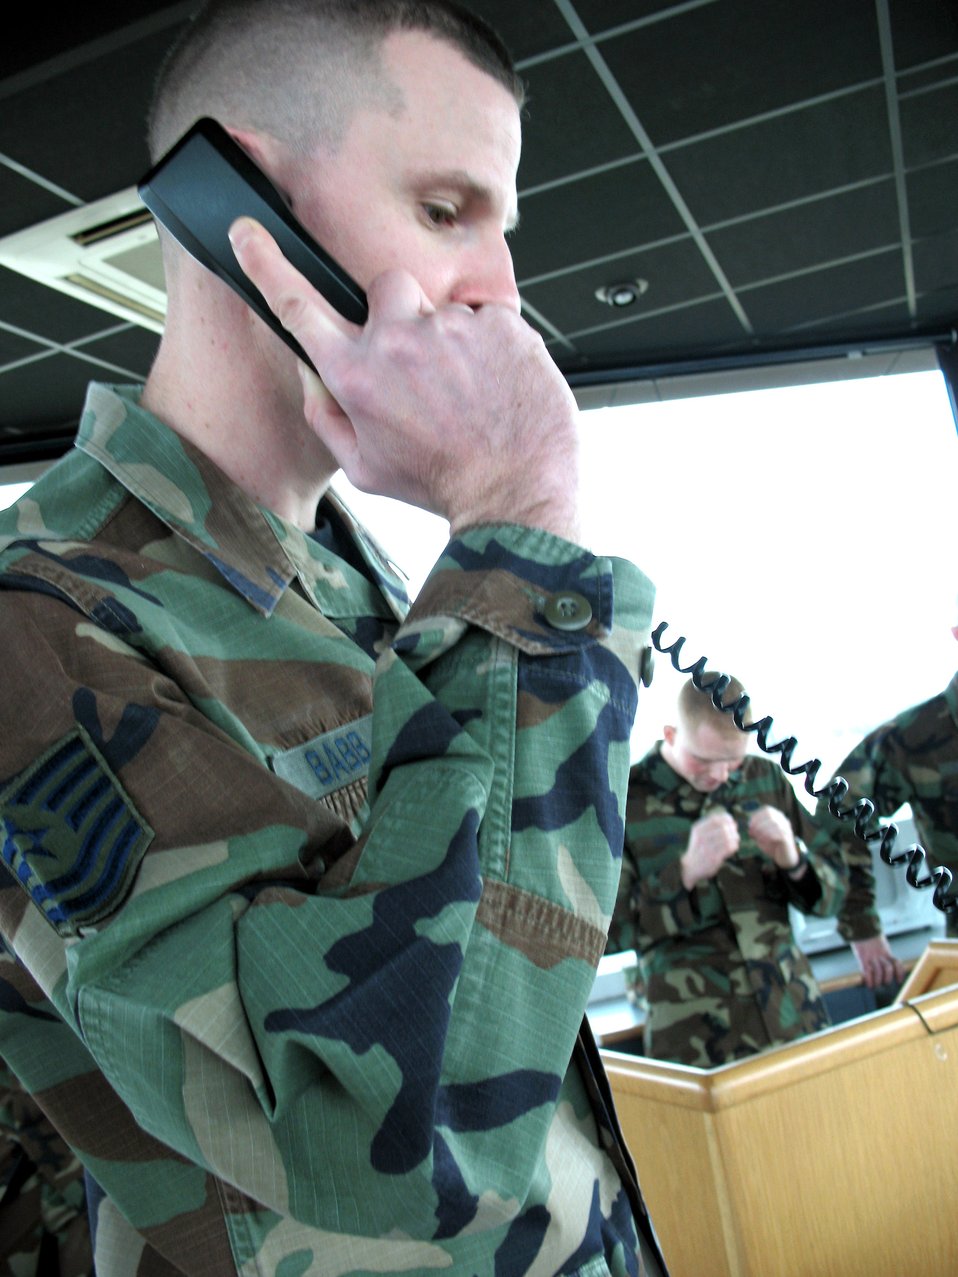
Terrorism Awareness

Tech. Sgt. Richard Babb advises people to report suspicious incidents or activities to local security officials right away. Sergeant Babb is a security forces NCO at Ramstein Air Base, Germany.